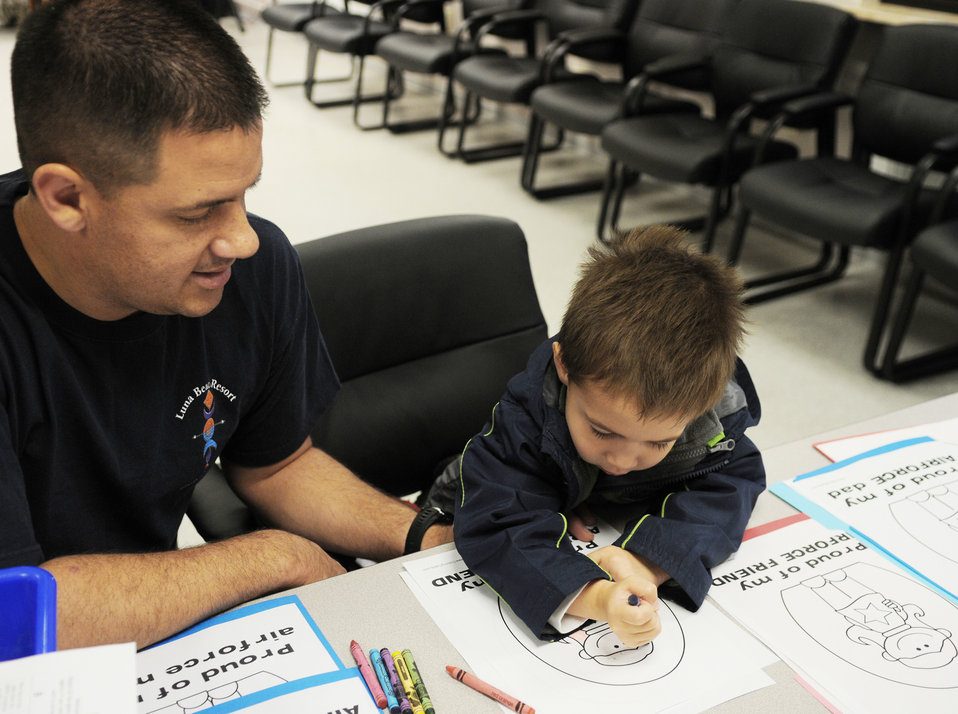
Ramstein officials celebrate Air Force Family Week

1st Lt. Paul Padilla colors pictures with his son, August, in the arts section at the Airman and Family Readiness Center open house for Air Force Family Week Nov. 4, 2009, at Ramstein Air Base, Germany. Lieutenant Padilla is an 86th Air Evacuation Squadron flight nurse.